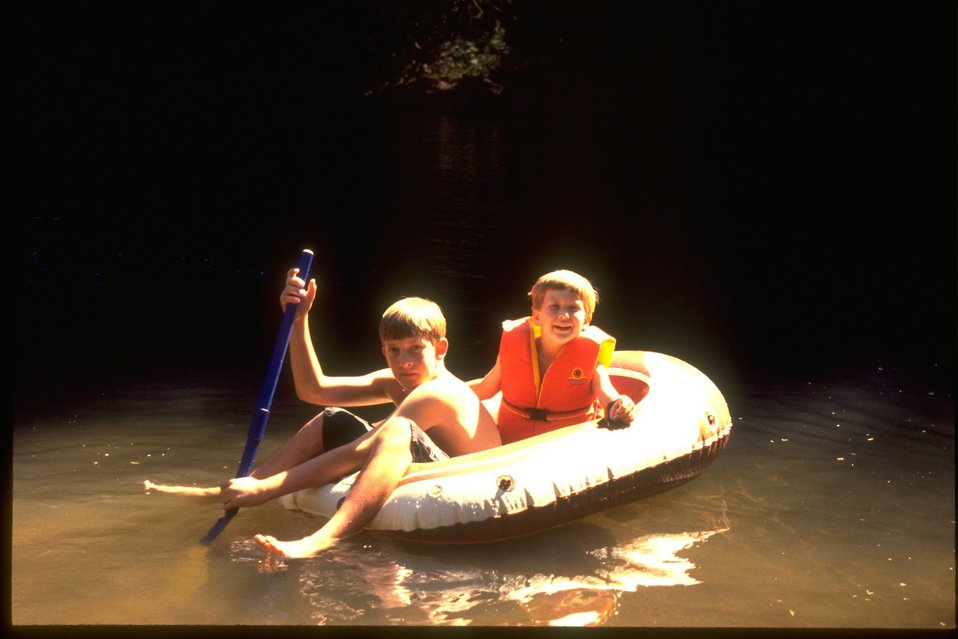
Kids rafting at Clay Creek park.